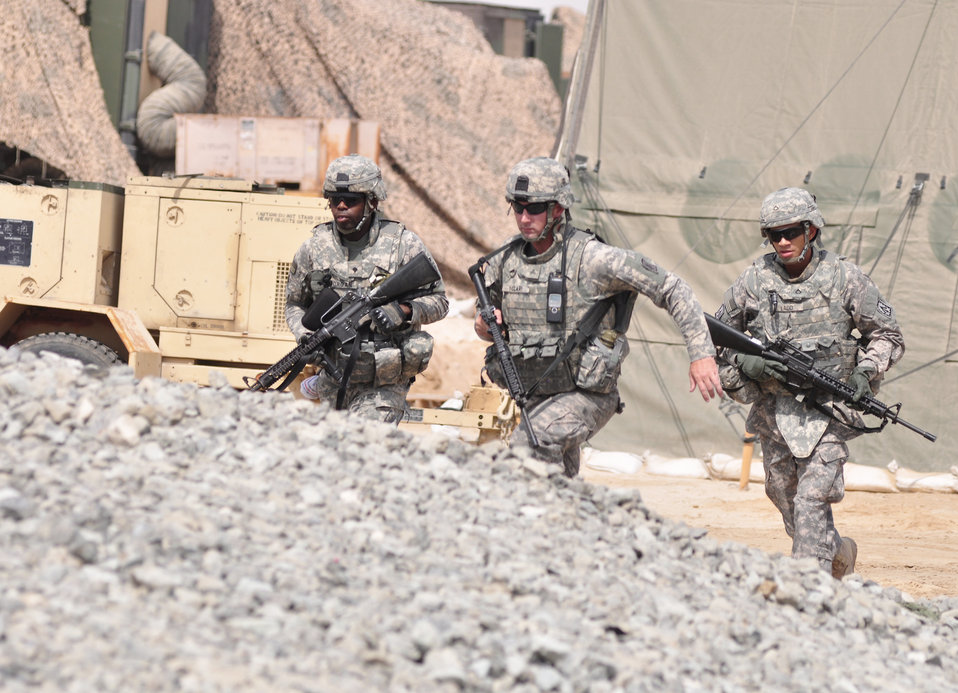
Air Force, Army training

Soldiers assigned to the 3rd Battalion, 4th Air Defense Artillery Regiment cordon the initial perimeter in response to a simulated unexploded ordnance June 23, 2011, in Southwest Asia. The members of 3-4 ADAR trained alongside Airmen from the 380th Air Expeditionary Wing as part of a joint emergency response exercise to ensure the 380th AEW and mission partner readiness.